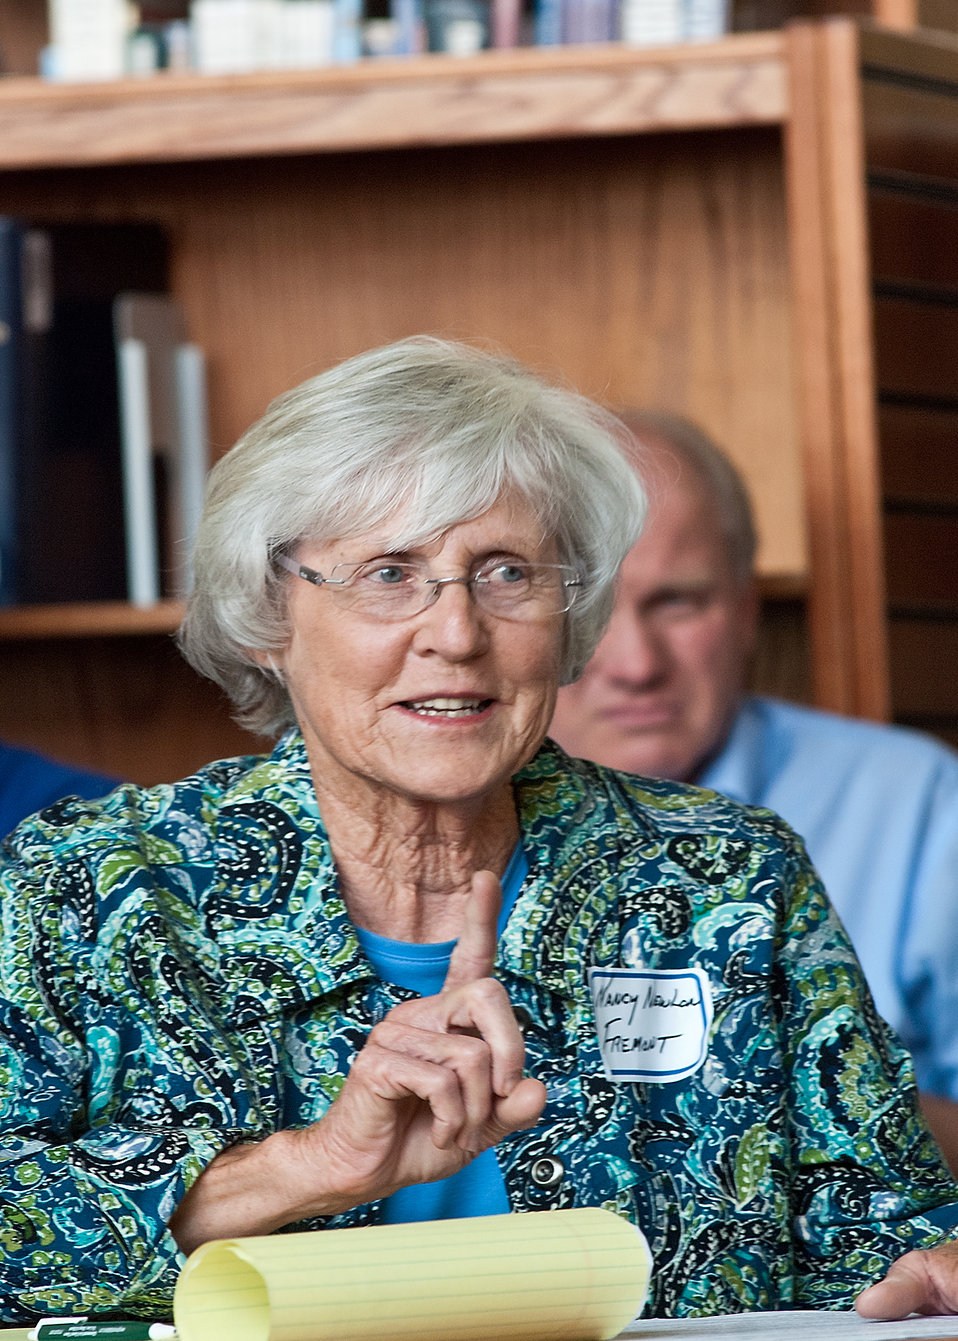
Nancy Newlon a farmer from Freemont County Iowa questions Agriculture Secretary Tom Vilsack during a town hall meeting at the Glenwood Community High School in Glenwood, Iowa on Thursday, June 16, 2011. Farmers, local and regional media listened and questioned Secretary Vilsack on the cause of the floodwaters along the Missouri River affecting Iowa and Nebraska. Secretary Vilsack offered advice and assistance available through the United States Department of Agriculture and other federal agencies.